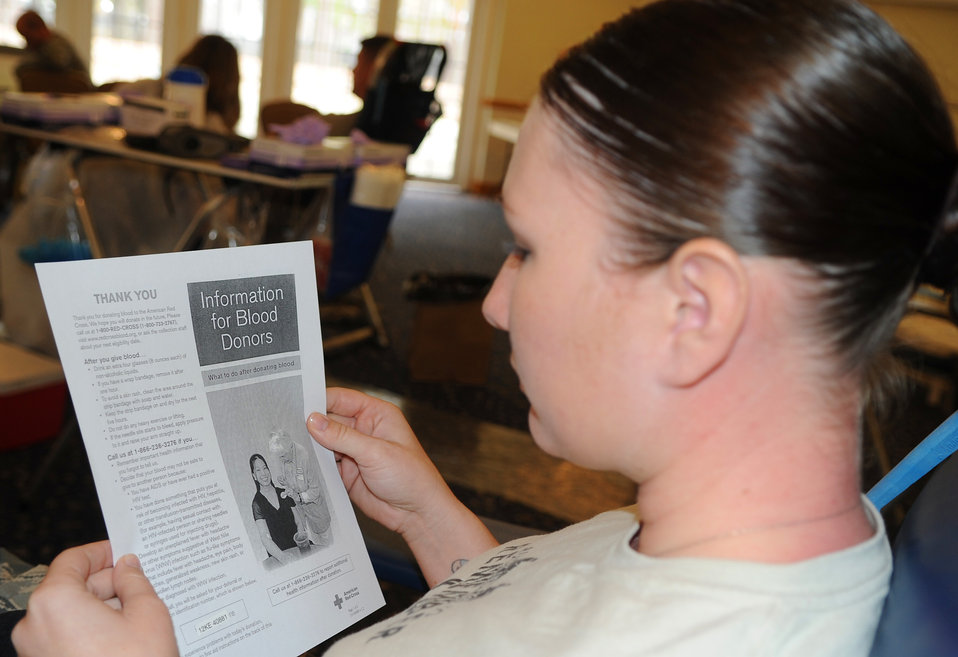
Draining the veins, for a good cause

Staff Sgt. Jennifer Nedzweckas, 4th Security Forces Squadron vehicle control officer, reads information about giving blood prior to donating to the American Red Cross at Seymour Johnson Air Force Base, Nov. 10, 2011. Every donator will be prescreened prior to giving blood to ensure that their blood is good. Nedzweckas hails from St. Roberts, Mo.